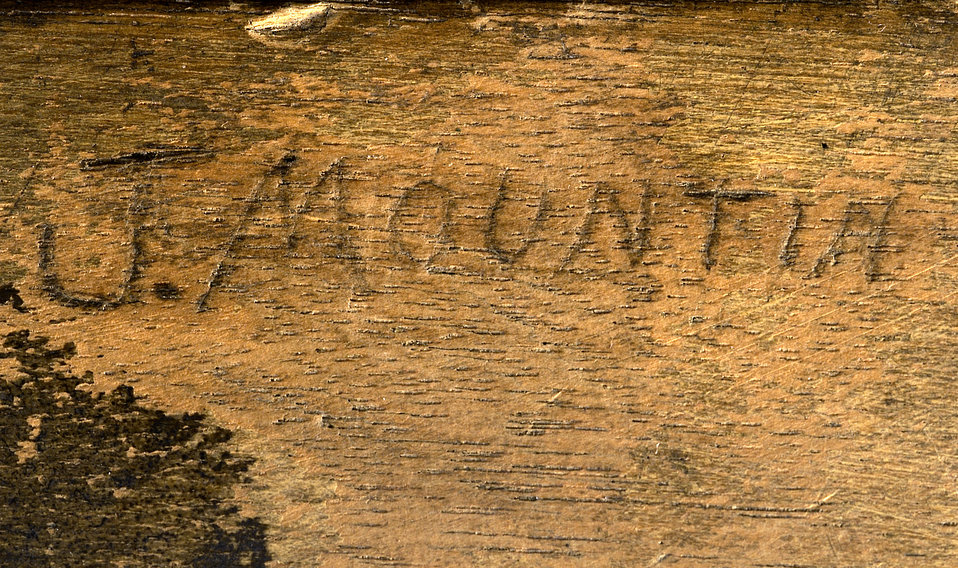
This was where Dr. Joseph W. Mountin carved his name into his microscope's wooden case for identification.